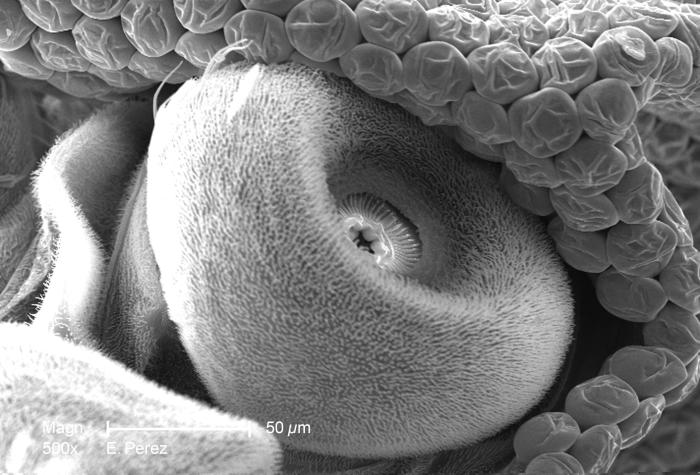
This is the first of three scanning electron micrographs (SEM) at successively higher magnifications revealing in greater and greater detail, the morphology of the 'scape', or the first segment of this unidentified mosquito's left antenna (see PHIL 10554 and 10555). Magnified 500X, you'll note that the central region of the scape is concave, and it's into this concavity that the second segment of the antenna, known as the 'pedicle', will interlock.